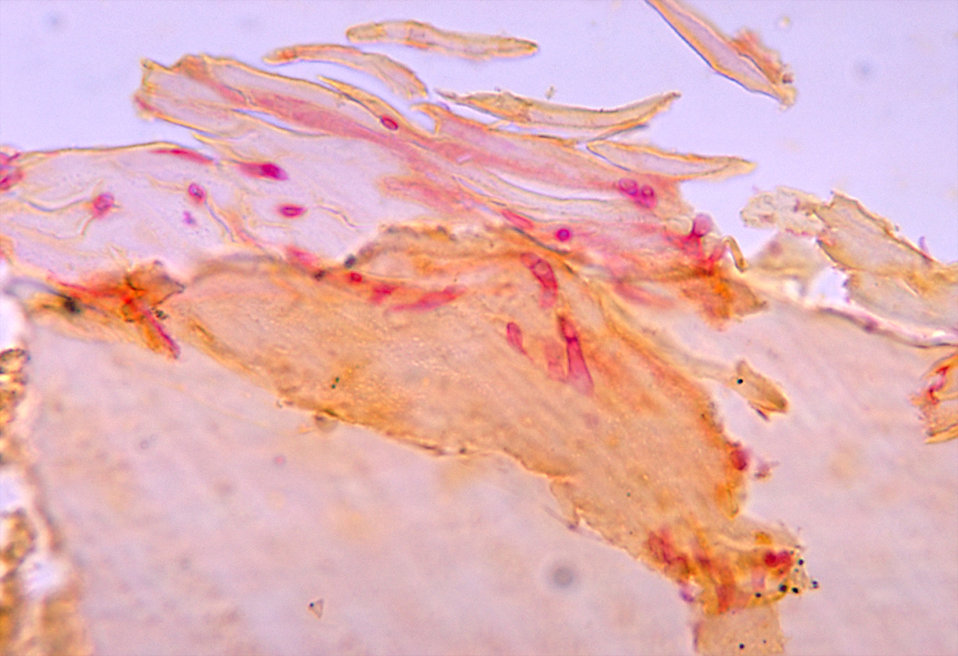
This photomicrograph depicts the histopathologic changes seen in onychomycosis due to a Fusarium sp. of fungus.